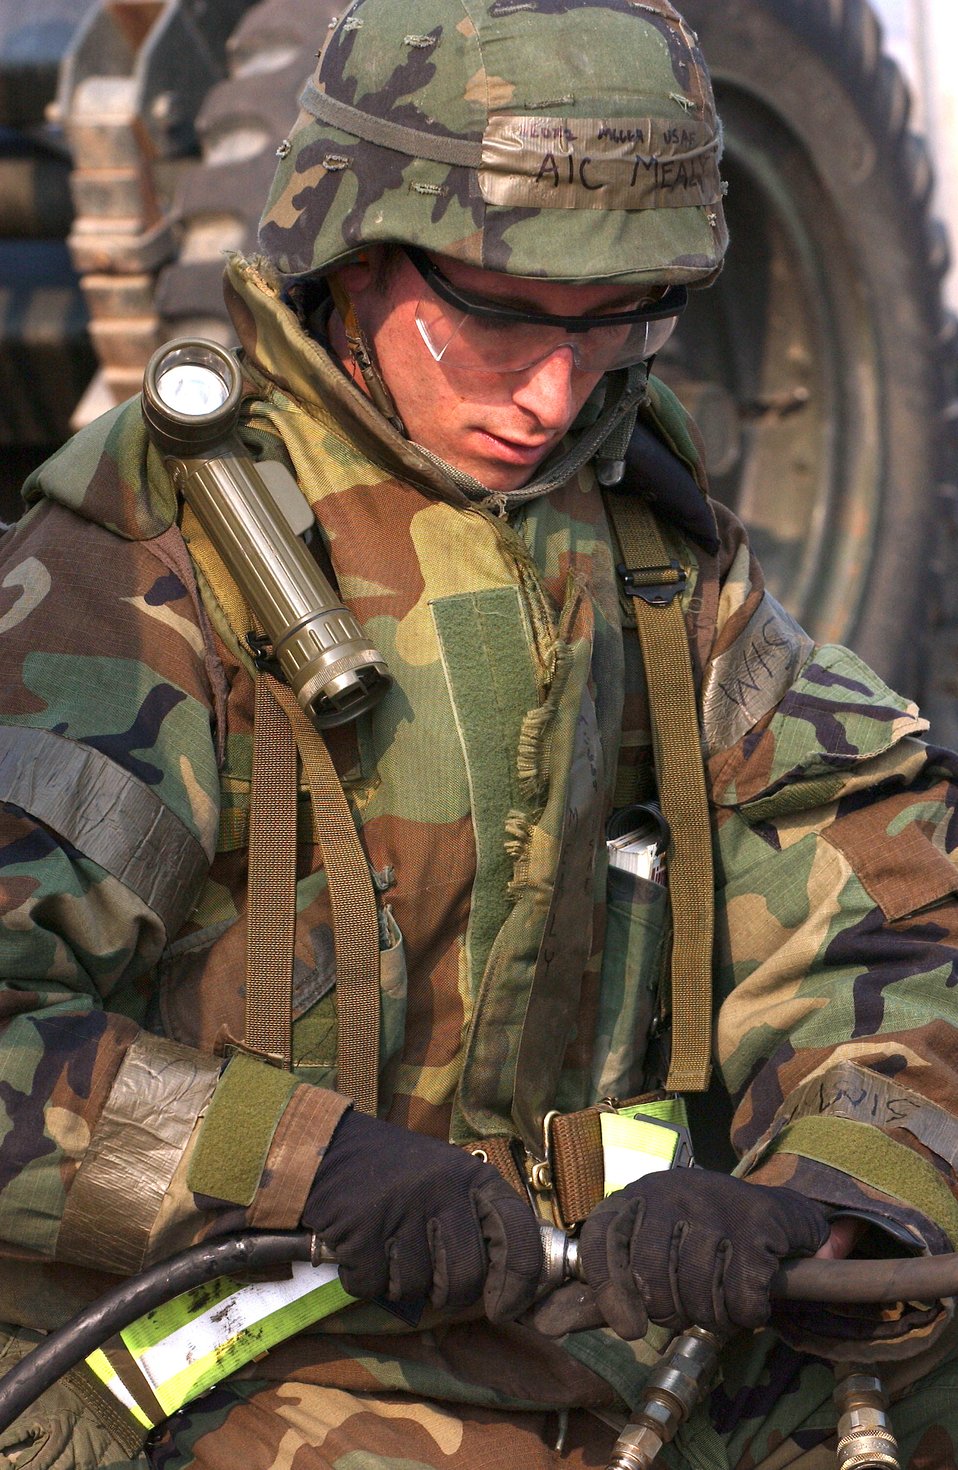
Keeping the runway in tip-top shape

Airman 1st Class Ryan Mealy connects a hydraulic hose Feb. 21 to a jackhammer used to install anchors for the mobile aircraft arresting system at Kunsan Air Base, Korea. Airman Mealy is a power pro apprentice for the 8th Civil Engineer Squadron and is a member of the airfield damage repair team. The arresting system is used to stop a damaged aircraft that cannot stop on its own during landing. ADR teams do everything from crater repair to airfield lighting making it possible to get aircraft back in the air quickly.